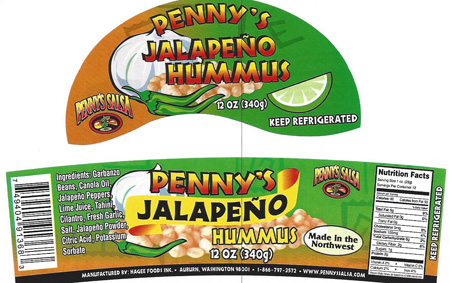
RECALLED – HummusPennys Jalapeno Hummus 12oz

July 16, 2013 – Product Recall – Hagee Foods Inc. dba Penny's Salsa Inc. Recalls Hummus Products Because of Possible Health Risk.